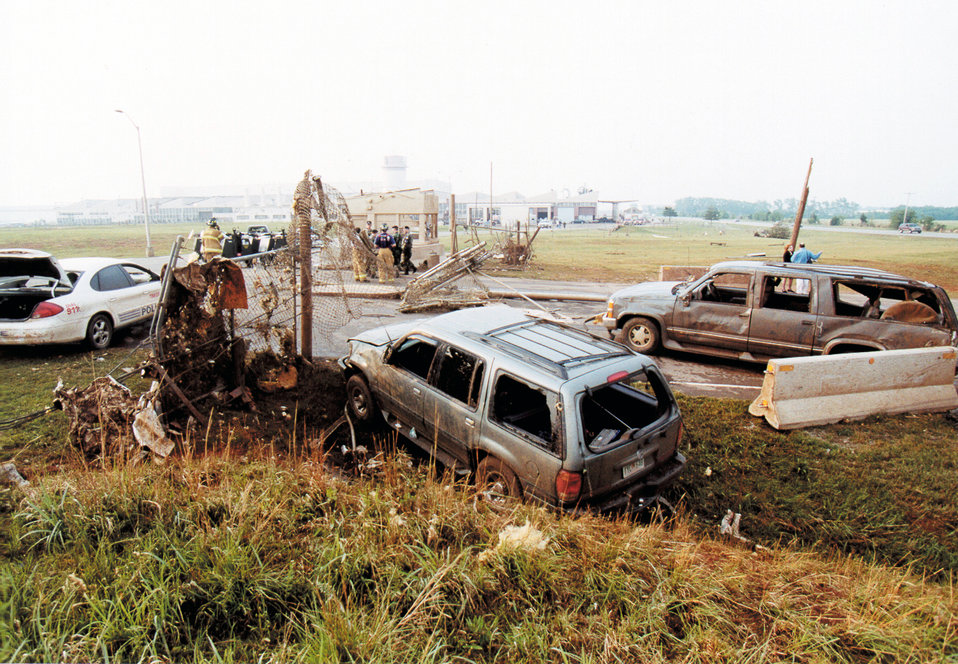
Tornado's path

TINKER AIR FORCE BASE, Okla. (AFPN) -- Vehicles rolled like marbles during a tornado here May 8. While no injuries or aircraft damage occurred, base officials expect damage to fencing and equipment to cost millions of dollars.